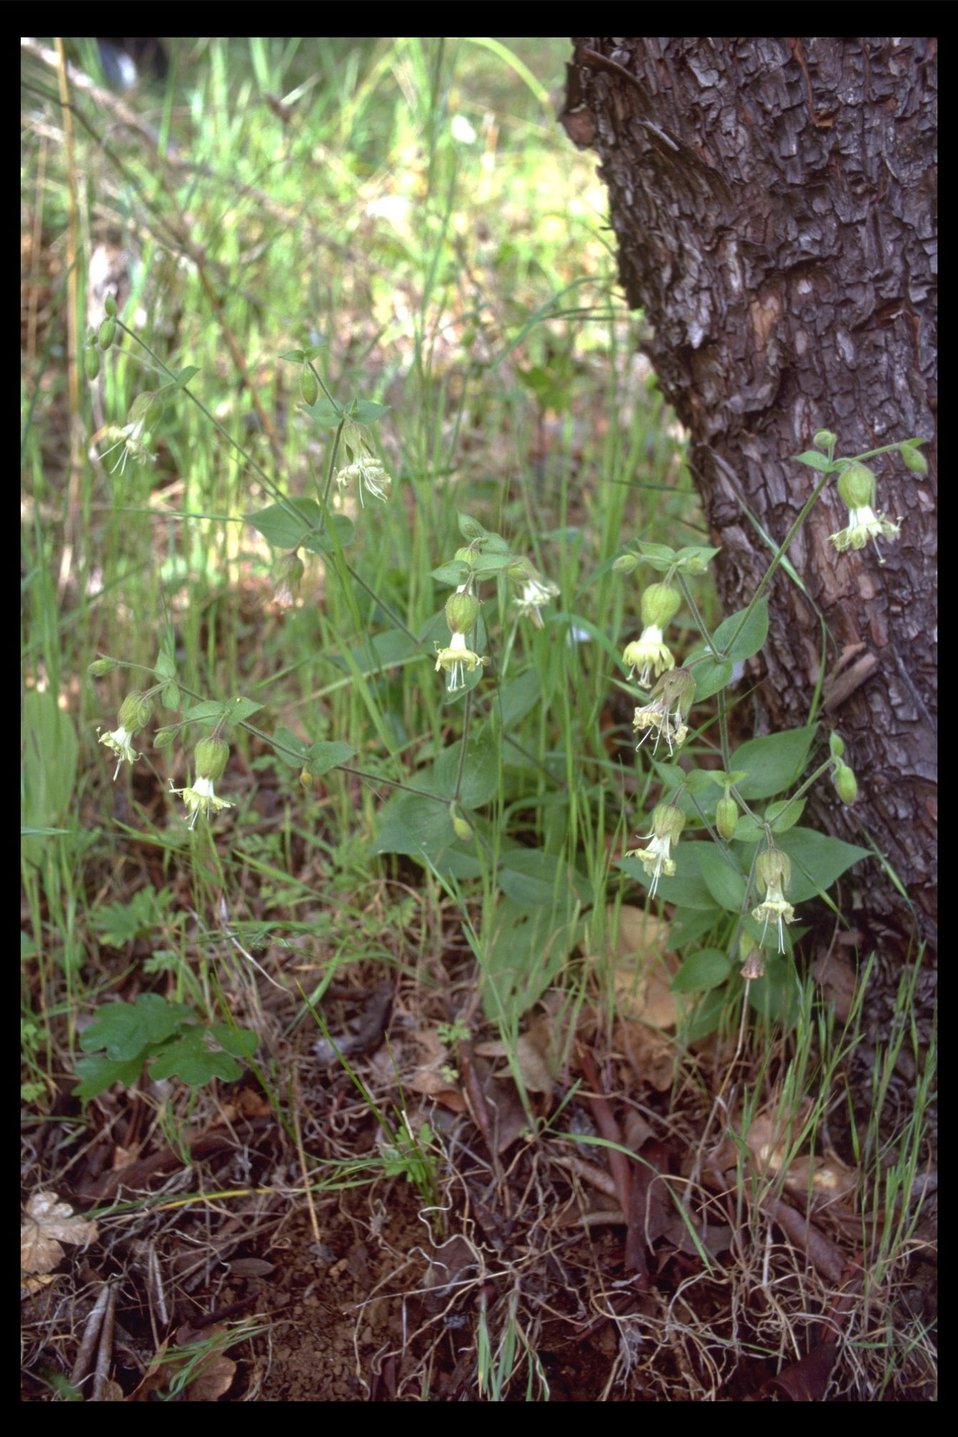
Catchfly (Silene campanulata) in Shady Cove near the Rogue River.